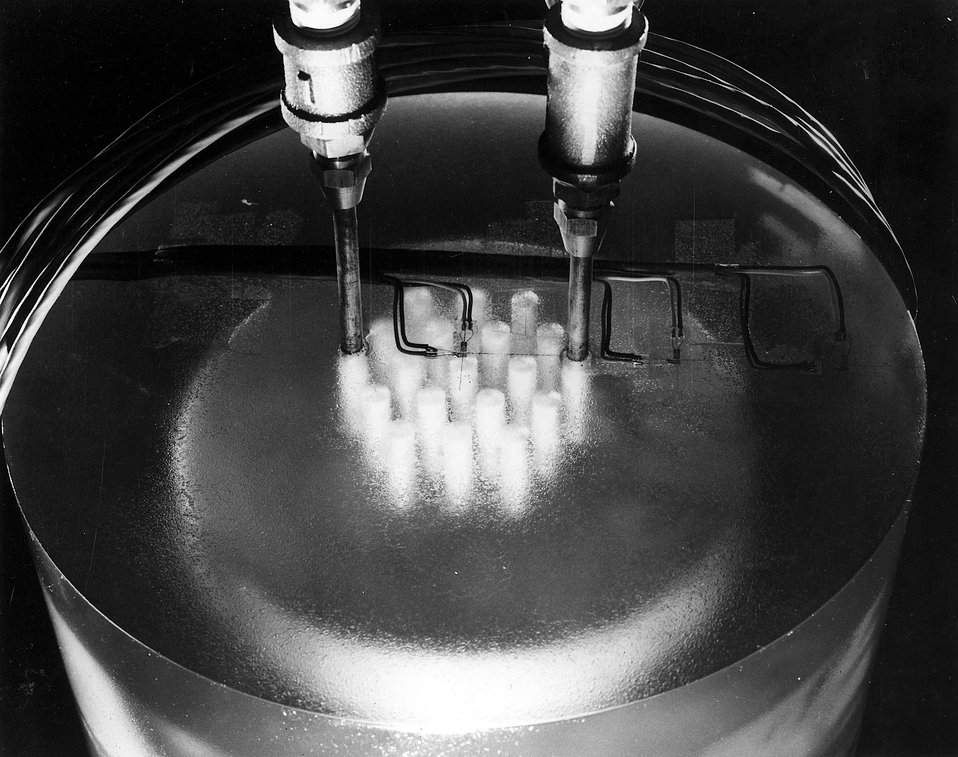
An epoxy model of a concrete pressure vessel is placed in a scattered light polariscope at Oak Ridge National Laboratory. c. 1967